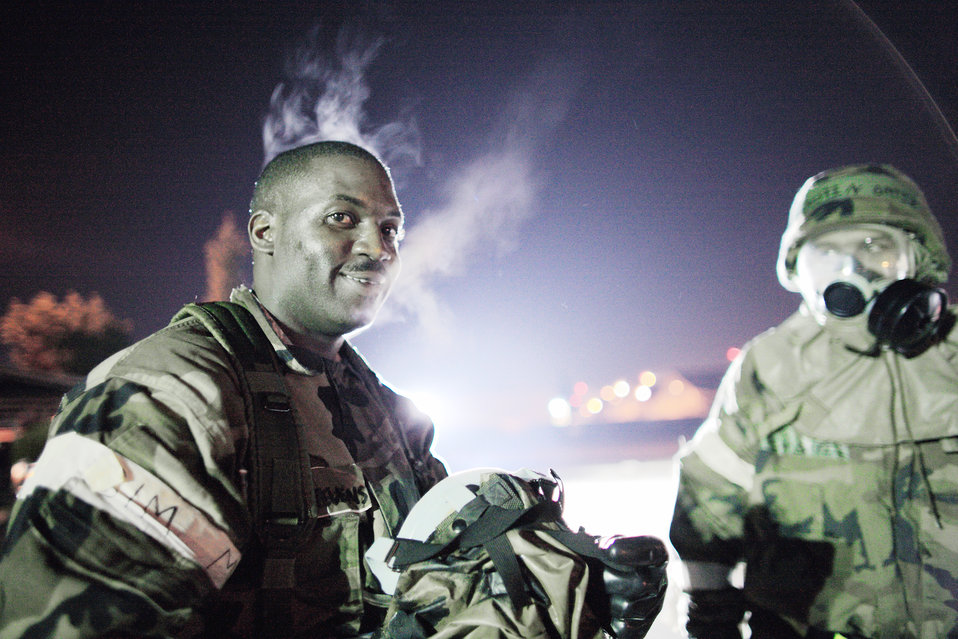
Fresh air!

With the exercise complete, Staff Sgt. Sadiq Stevens shows the temperature difference as steam rises from him after removing his gas mask April 1, 2010, at Yokota Air Base, Japan. Sergeant Stevens is assigned to the 374th Operations Support Squadron.